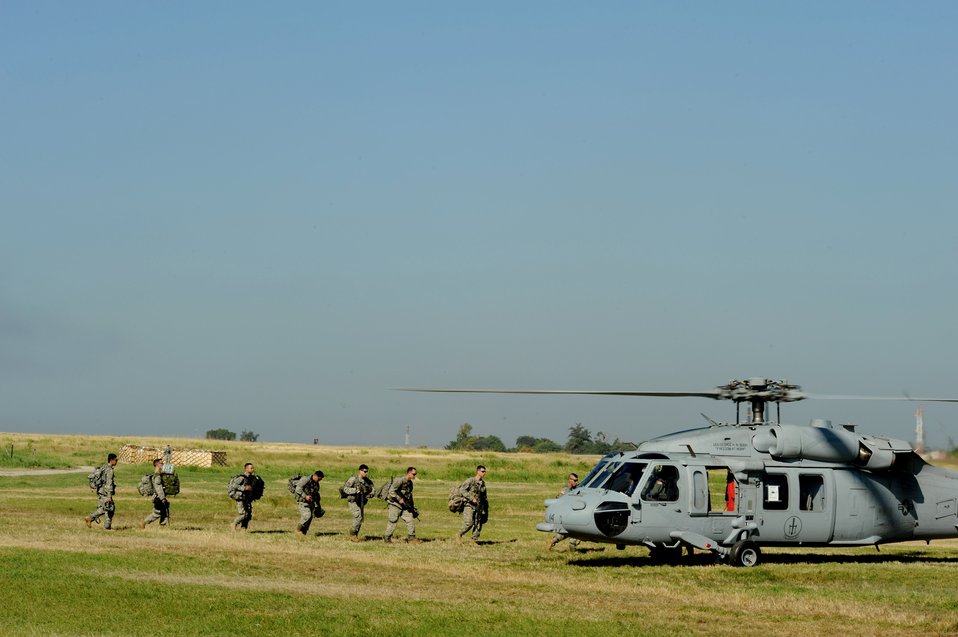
Haiti Earthquake Relief

Soldiers from the 82nd Airborne, Ft. Bragg, N.C. load supplies into a U.S. Navy HH-60 from Jacksonville Naval Air Station, Fla., Jan 18, 2010 for distribution. An aftershock at magnitude 6.1 shook the area early on the morning of Jan. 20 giving Soldiers working in the area just a taste of what the original magnitude 7 earthquake was like.